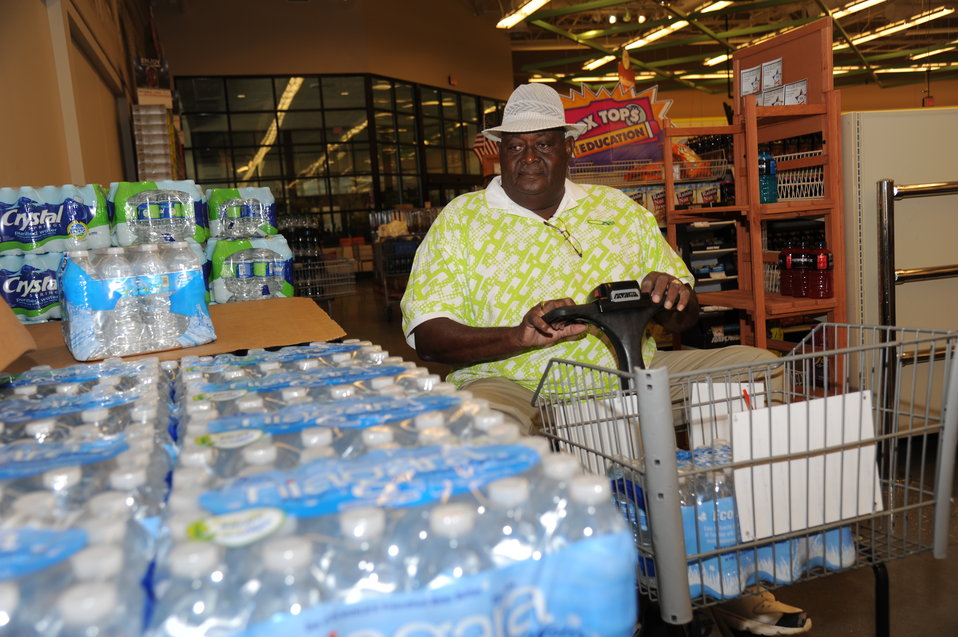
Keesler takes preventative measures to prepare for Isaac

8/28/2012 - A.J. Breland, Army retired of Brooklyn, Miss., loads his grocery cart with cases of water and other hurricane supplies into her trunk Aug. 27, 2012, at Keesler Air Force Base, Miss. Keesler personnel are taking preventative measures to prepare and protect themselves and Keesler's assets as the base commander has declared HURCON 3, meaning destructive winds of 58 mph or greater are expected as Isaac approaches.